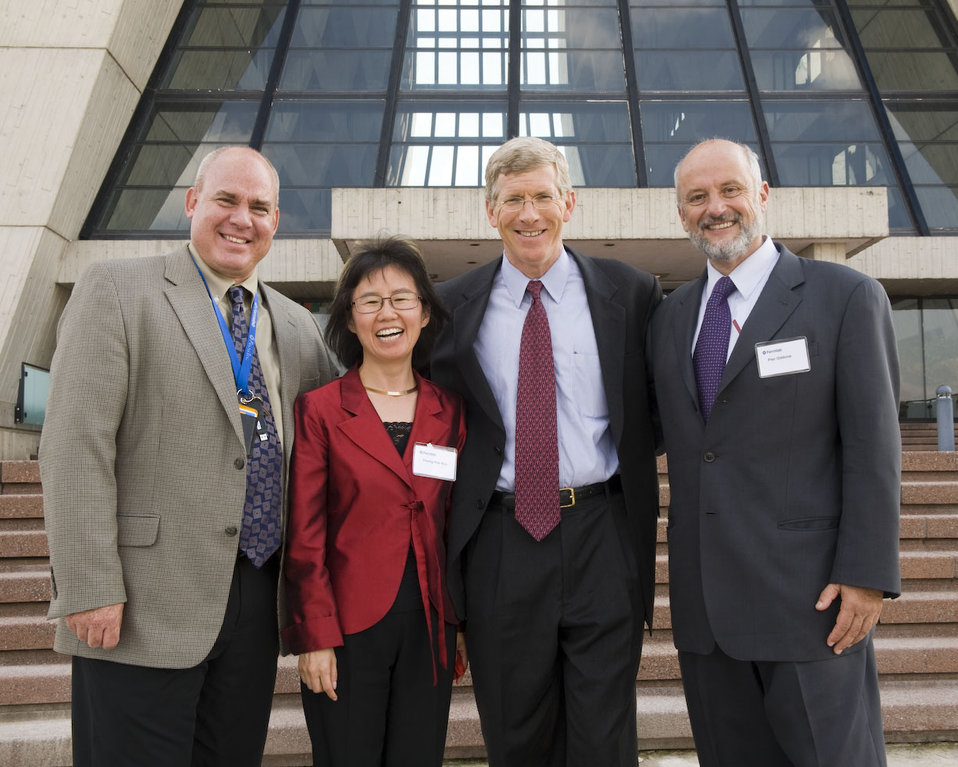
Group photo in front of Wilson Hall, Fermilab’s 16-story landmark building: Mark Bollinger, DOE Fermi Site Office (left); Young-Kee Kim, Fermilab deputy director; DOE Deputy Secretary Daniel Poneman; Pier Oddone, Fermilab director.